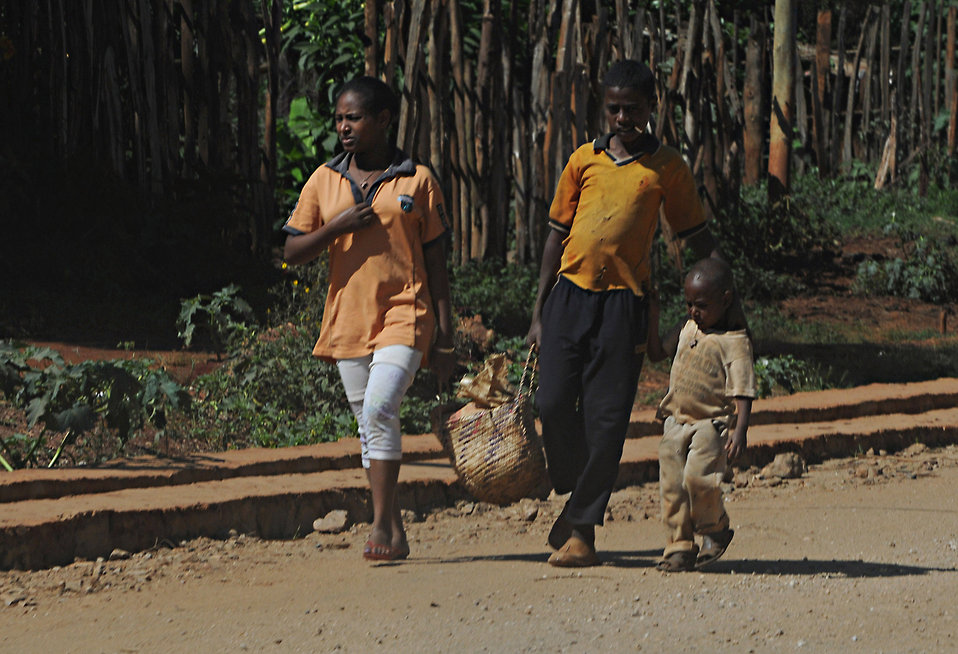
144 hours in Ethiopia: Mr. Solomon

A family walks along the road from Negele Borena, Ethiopia, Dec. 7, 2011. Thanks to the recent completion of a bridge spanning a river in Negele Borena, families like this will be able to cross the water safely.